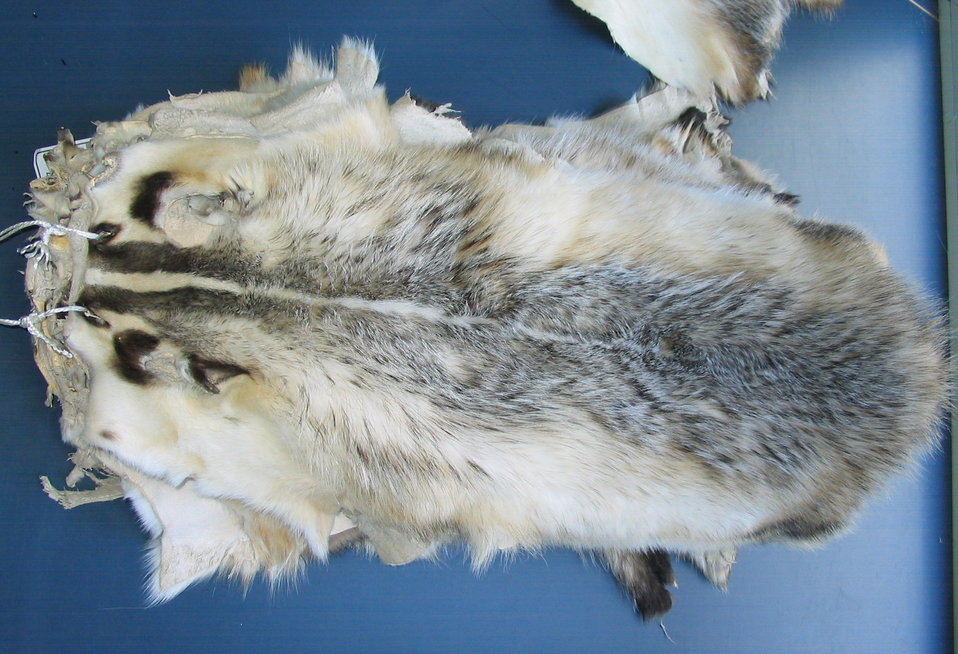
Deutsch: gebleichte nordamerikanische Dachsfelle, Kürschnersortiment